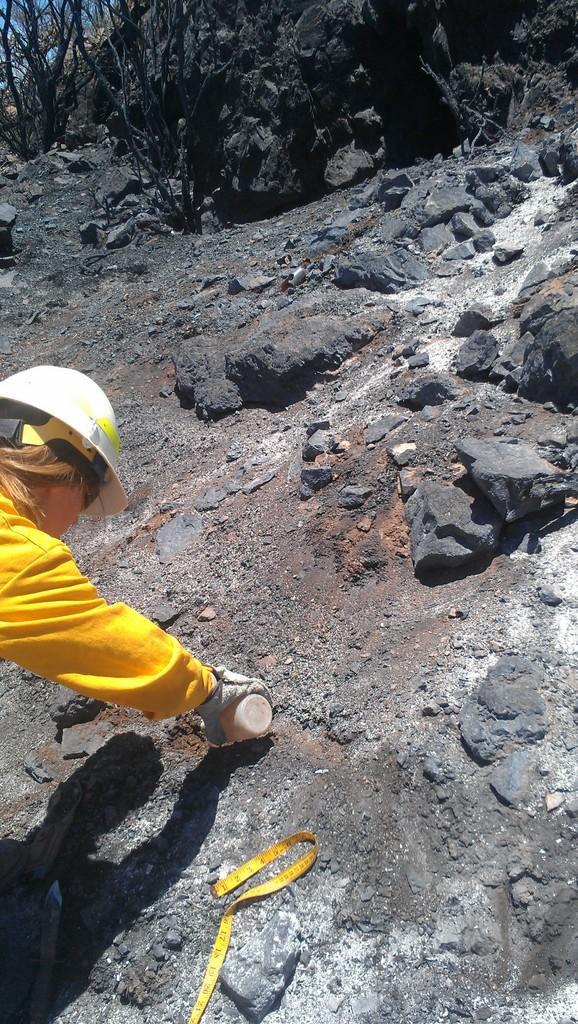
A soil scientist with the Burned Area Emergency Response (BAER) team tests for water penetration on at a high severity burn area. The Silver Post Fire response has the Burned Area Emergency Response (BAER) team beginning operations to seed acres of high burn severity and to mulch additional acres. Seeding reduces effects to downstream life, property, and infrastructure by reducing erosion and runoff. Areas of high burn severity are to be seeded with a quick germinating, non-persistent annual cereal barley that would provide rapid ground cover. A small percentage of native perennial species would also be included to give the burned area a jump start in natural recovery, and provide for long-term ground cover. Mulch is the most effective treatment for controlling erosion and runoff, as it provides immediate ground cover. Mulch also assists in stabilizing soil in and around these areas.